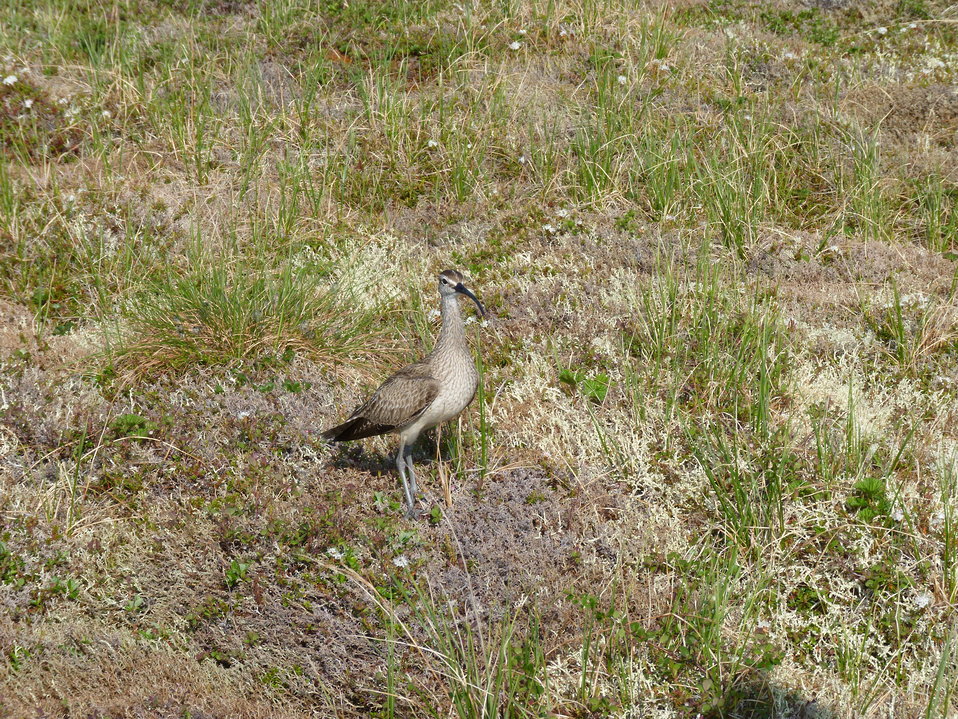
Whimbrel

Andreafsky wilderness, Yukon Delta National Wildlife Refuge